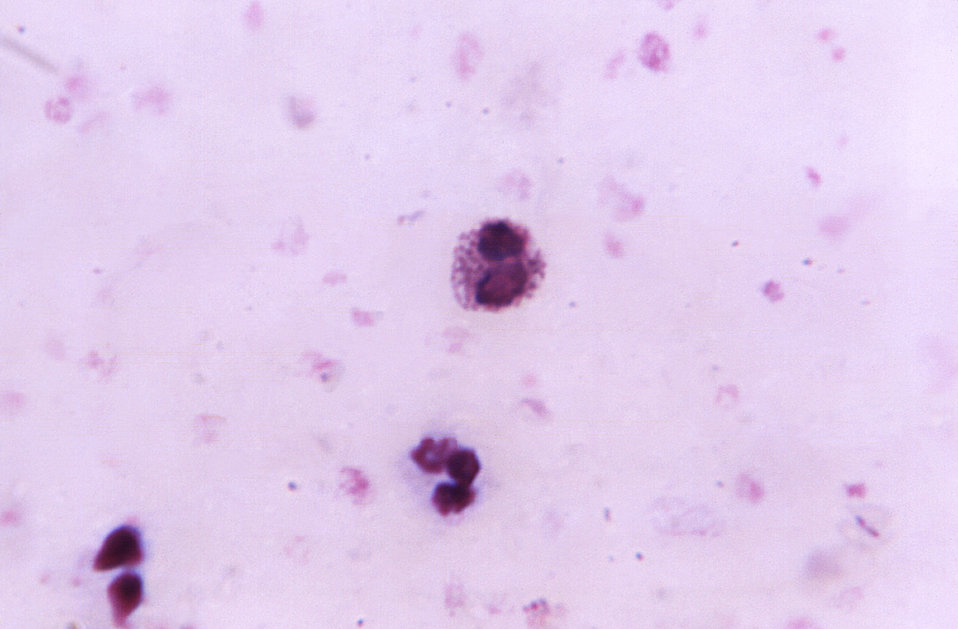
Magnified 1125X, this thick film photomicrograph revealed the presence of a darkly-granulated eosinophil, a type of white blood cell, also known as a granulocyte due to these intracytoplasmic granules.